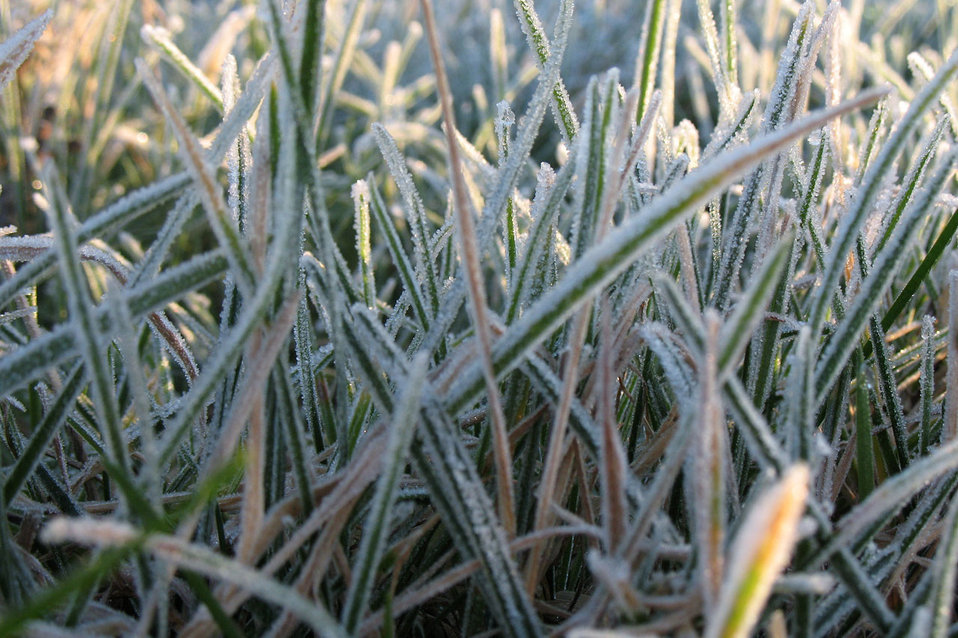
Morning frost

Frost on the grass in the morning.